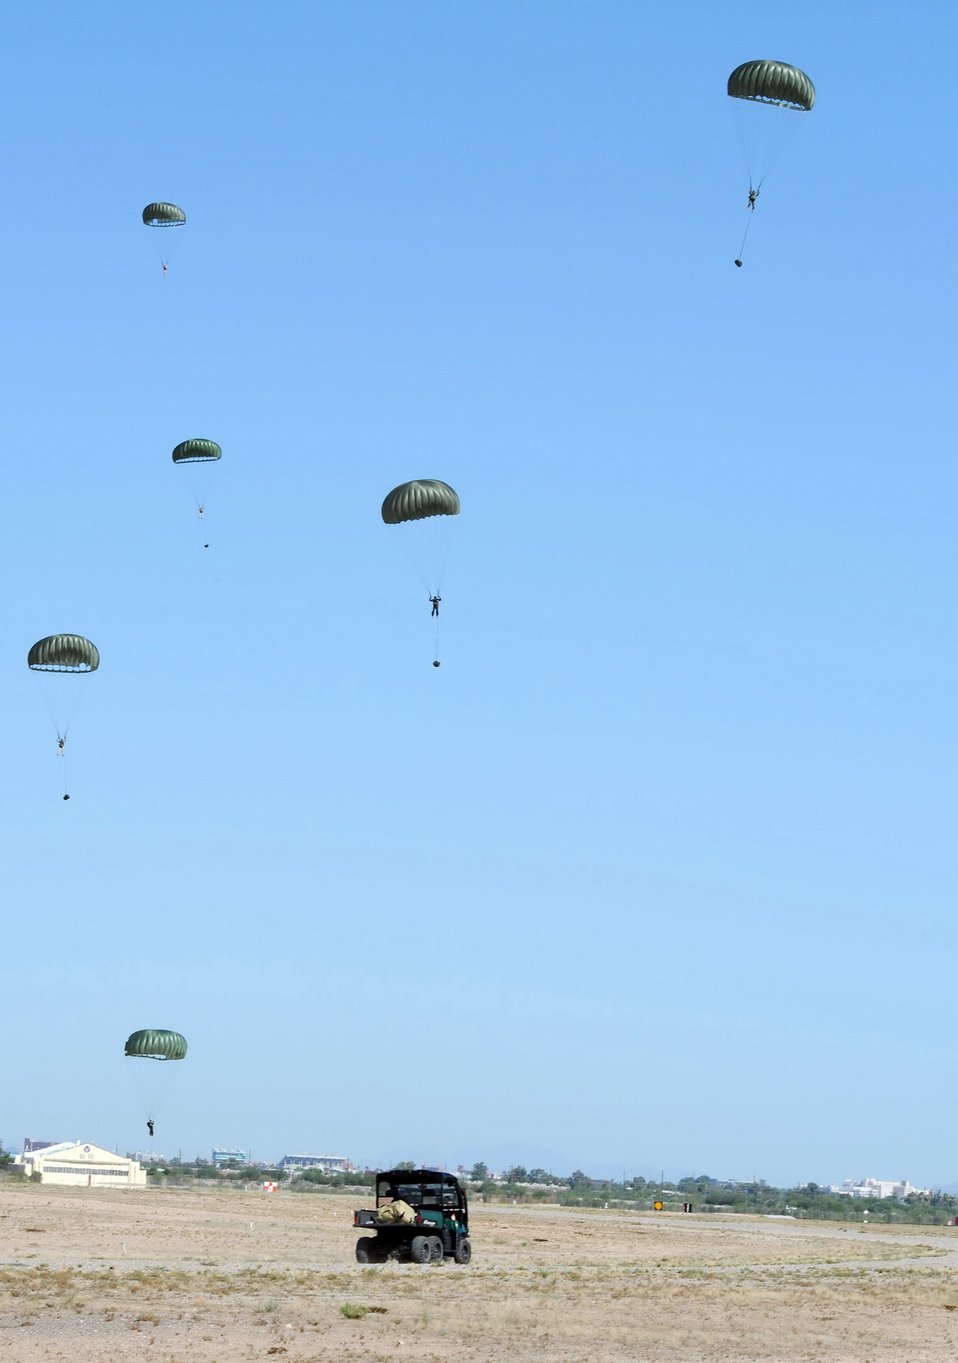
Multi-lift airdrop at Davis-Monthan AFB

Airmen from the Air Force Reserve Command's 306th Rescue Squadron parachute out of a HC-130 Aug. 15 at Davis-Monthan Air Force Base, Ariz. The Airmen were participating with the 79th Rescue Squadron in the first multi-lift HC-130 airdrop here. They were able to accomplish seven drops from different altitudes.